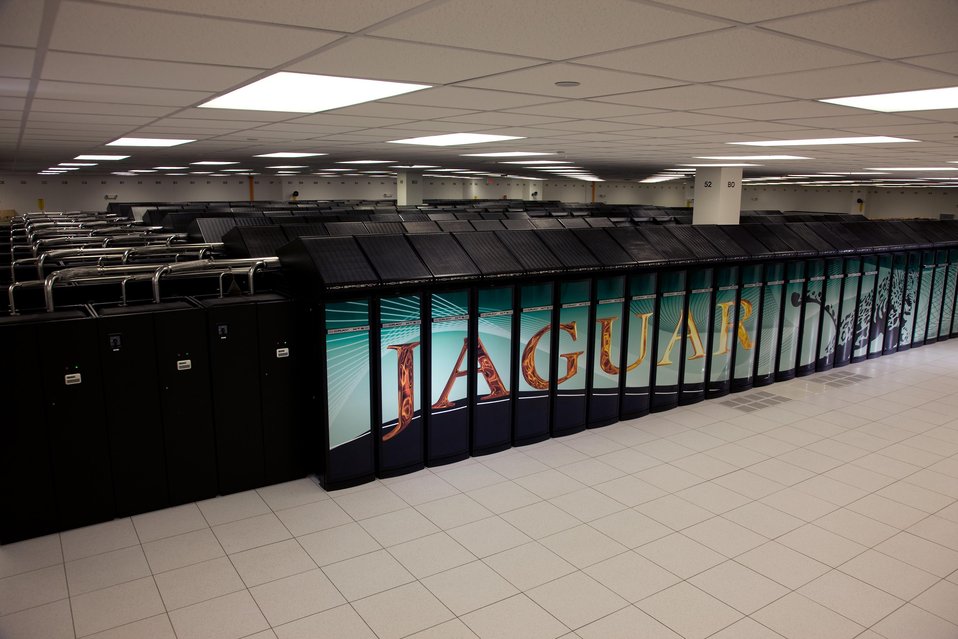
Latest upgrade -Cray XT Jaguar supercomputer at ORNL has increased the computer power to a petaflops -quadrillion mathematical calculations per second, Jaguar - worlds first petaflops dedicated to open research.

The new petaflops machine will make it possible to address some of the challenging scientist's problems in areas such as climate modeling, renewable energy, materials science, fusion and combustion. Jaguar is a partnership with DOE, ORNL and Cray that has pushed the computing capability at a rapid pace. The current upgrade is the result of an addition of 200 cabinets of Cray XT5 to the existing 84 cabinets of the XT4 Jaguar system.